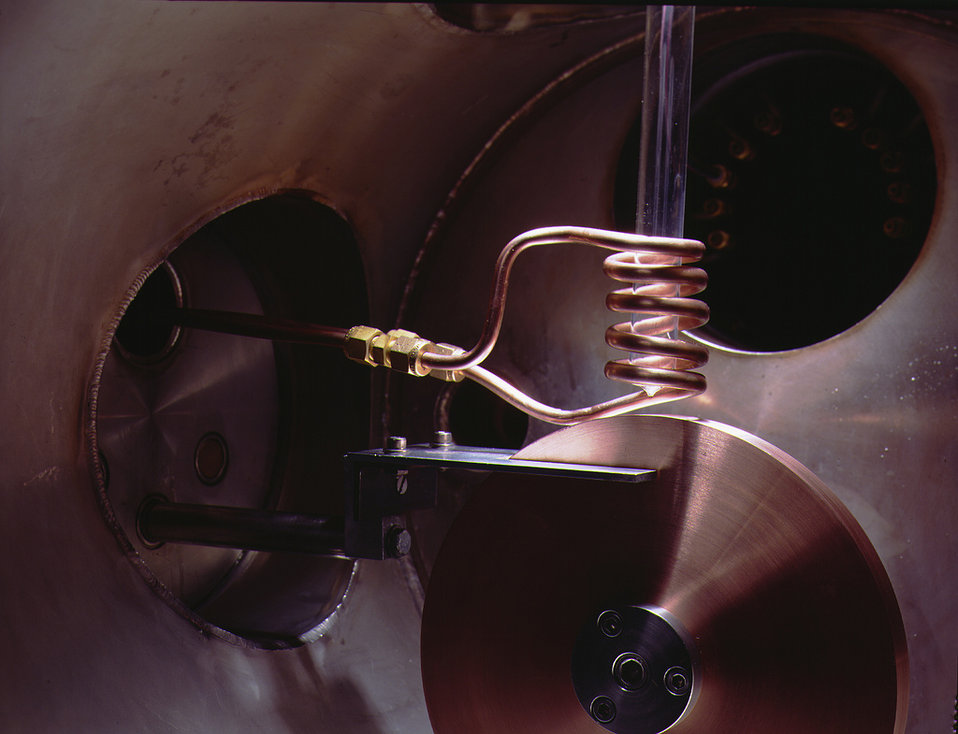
Melt spinner.

Materials researchers at Ames Laboratory use this melt spinner to form metallic glass. A stream of molten metal is poured onto the large, spinning cooper wheel and solidifies so quickly that the materials forms in a thin ribbon that retains an amorphous molecular structure similar to the material forms in a thin ribbon that retain an amorphous molecular structure similar to the liquid state instead of the crystalline structure normally found in solid metals.